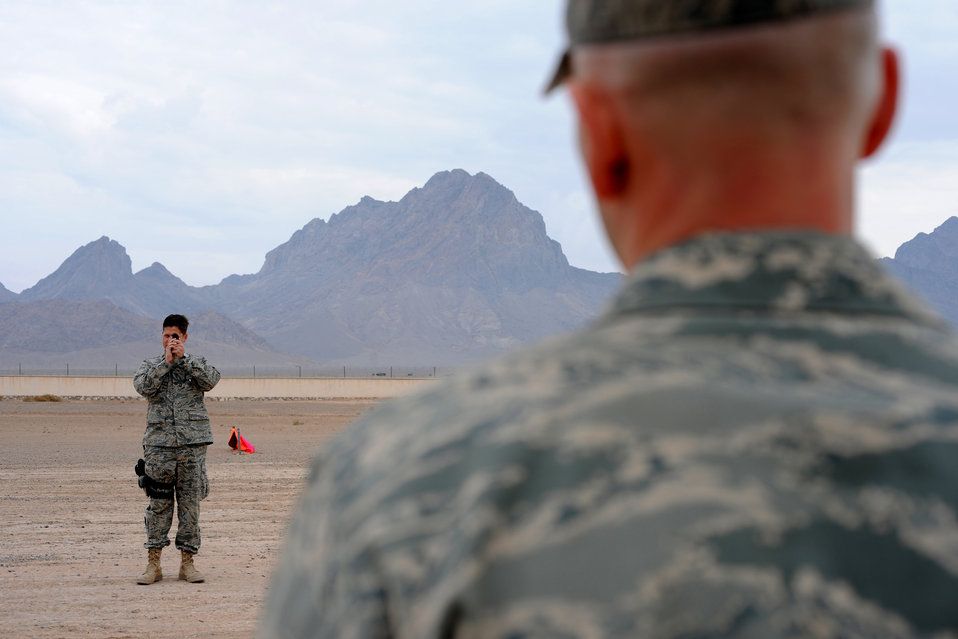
CRW Assessment Team evaluates cargo solutions for stakeholders in Afghanistan

Maj. Blane Rasch takes landing zone gradients at Forward Operating Base Farah, Afghanistan, Dec. 2, 2009. A team deployed to Afghanistan to visit all established airfields with a major military presence. The results of their study will be briefed to the International Security Assistance Force commander. The ultimate goal of the team is to help find solutions for getting more forces into the war zone and sustaining those forces once they are in place. Major Rasch is a C-130 Hercules pilot and member of an Air Force airfield assessment team from the 621st Contingency Response Wing at Joint Base McGuire, N.J.